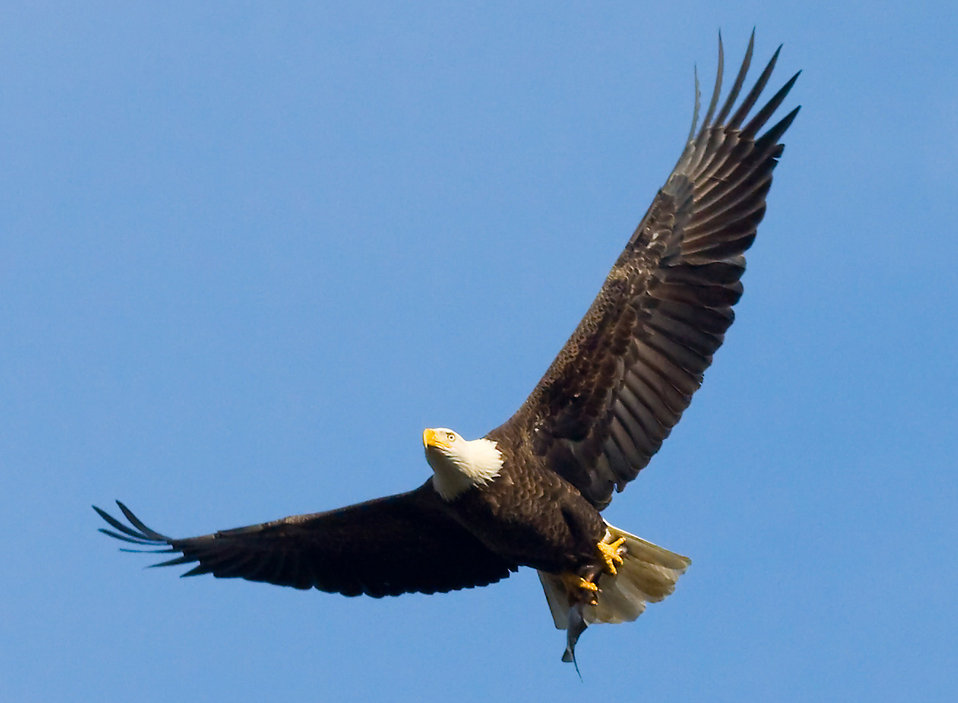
Bald eagle with fish

Bald eagle holding a fish in its talons at John Heinz National Wildlife Refuge in Philadelphia, Pennsylvania.